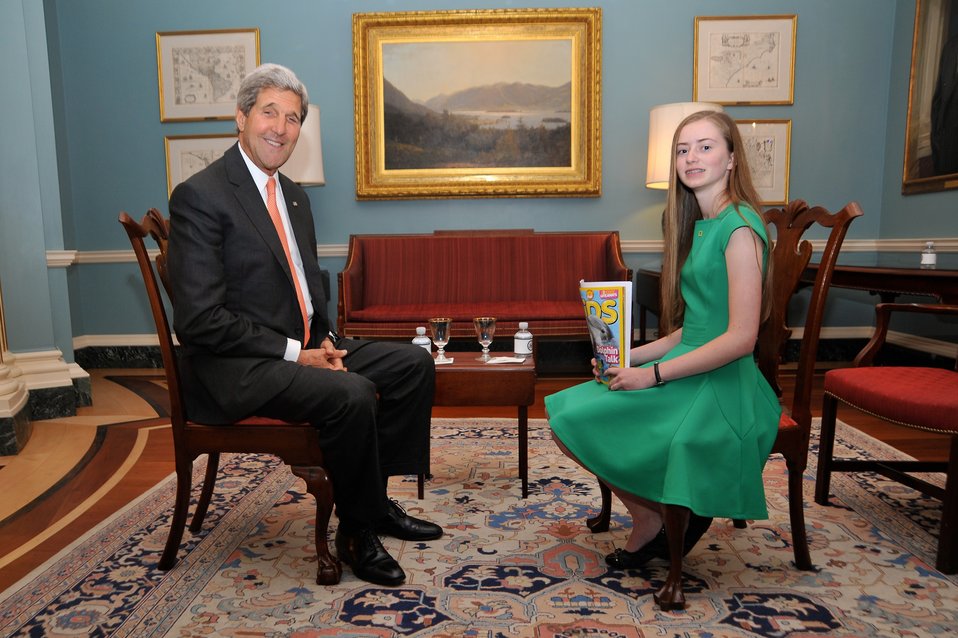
Secretary Kerry Poses With National Geographic Kids Reporter Moore

U.S. Secretary of State John Kerry poses for a photo with National Geographic Kids reporter Mallory Moore after an interview focused on the 'Our Ocean' conference held at the U.S. Department of State in Washington, D.C. on June 17, 2014.